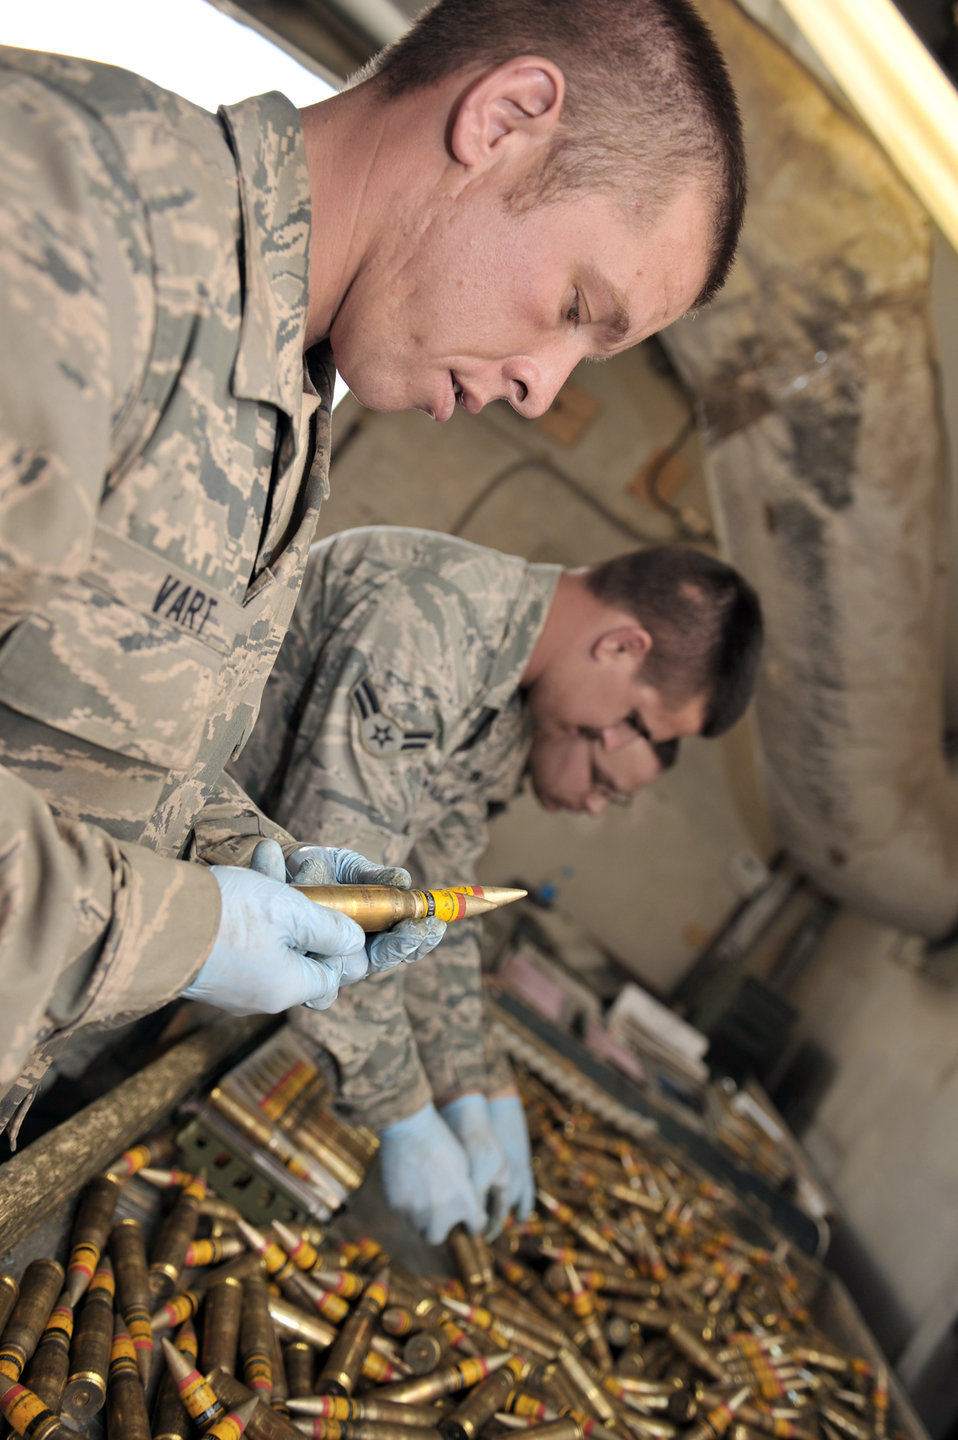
Ammo airmen supply the fight

Staff Sgt. Glen Vart inspects 20 millimeter rounds to ensure they are serviceable March 23, 2011, at Bagram Airfield, Afghanistan. Sergeant Vart is an ammunition supply point technician assigned to the 455th Expeditionary Maintenance Squadron.